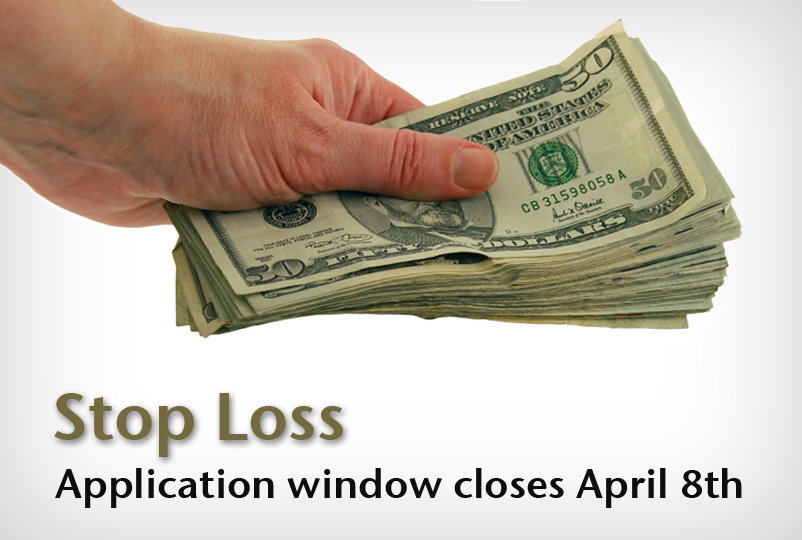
Stop Loss